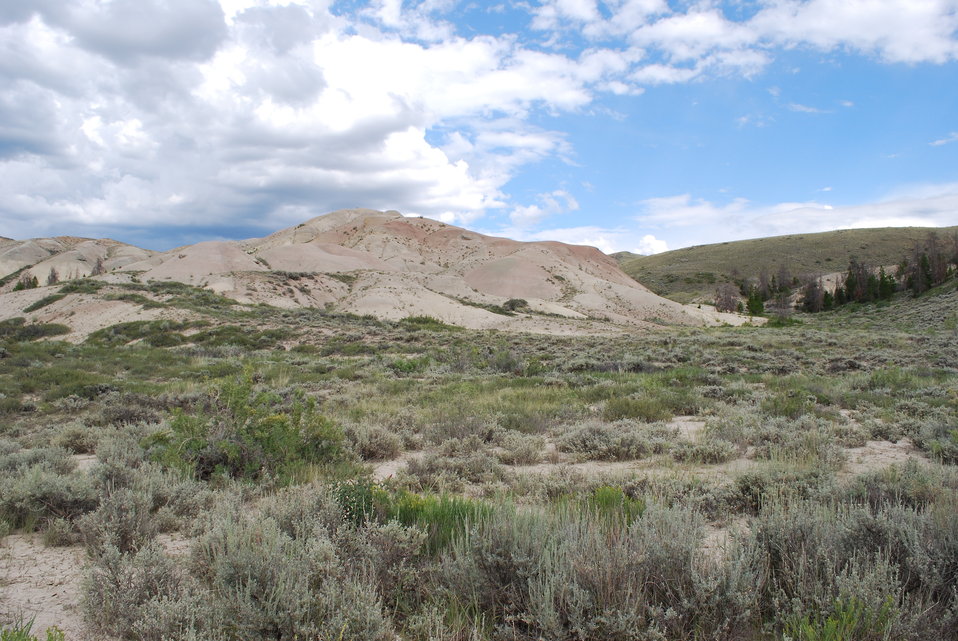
Penland Beardtongue Habitat

The unique and moon-like barren habitat of Penland beardtongue.

Photo credit: USFWS
...........................................................................

BACKGROUND:
The Osterhout milkvetch (Astragalus osterhoutii) and the Penland beardtongue (Penstemon penlandii) are both extremely rare plants endemic to barren white shale outcrops of the Niobrara Shale and Troublesome Formations in Grand County of northern Colorado. Both species are only found near the Town of Kremmling in “Middle Park,” a high elevation sagebrush park at 7,500 feet surrounded by various ranges of the Rocky Mountains in Grand County, Colorado.

The Osterhout milkvetch, a member of the pea family (Fabaceae), is a slender-stemmed plant with elliptical leaves and creamy white flowers in clusters at the end of foot-long stalks. It was discovered in 1905 by one of Colorado’s pioneer botanists, George Osterhout. The species only grows on highly seleniferous (containing the element selenium) soils that accumulate in foliage and causes the plant to smell pungently of garlic. Only a small proportion of the many milkvetch species are known to accumulate this toxic chemical. Osterhout milkvetch is known from five small and scattered locations within an eight-mile radius, across an estimated 600 acres of habitat.

The Penland beardtongue, a member of the plantain family (Plantaginaceae), was discovered much later than the Osterhout milkvetch. In 1986, two Colorado botanists, David Johnson and John Anderson, discovered the new species on a visit to an Osterhout milkvetch site along Troublesome Creek. The Penland beardtongue is a small plant with thin, needle-like leaves and bright blue to violet flowers. It is known only from a unique badland area along Troublesome Creek extending 4 miles north to south on an estimated 800 acres. In order to reproduce, this species requires pollination by native ground-dwelling, solitary bees in the genus Osmia (mason bees).

Today, these two Middle Park endemic species are threatened by commercial, residential, and agricultural property development, the associated new utility installations and access roads, reservoir operations, off-highway vehicle recreation, oil and gas exploration, and livestock grazing. A loss of pollinators and their habitat due to development is also a threat to both species. Because of the limited ranges of the two species, their small population sizes, and numerous threats, they were listed as endangered under the Endangered Species Act in 1989.

Thirty-three percent of the Osterhout milkvetch and a small percentage of the Penland beardtongue populations are on private lands. The Endangered Species Act does not protect plants on private lands and therefore, all conservation actions on private lands are voluntary. Funding is available to landowners wanting to conserve the species. Please contact Gina Glenne or Ellen Mayo at 970-243-2778 for further information on this species and ways that you can help with conservation and recovery.